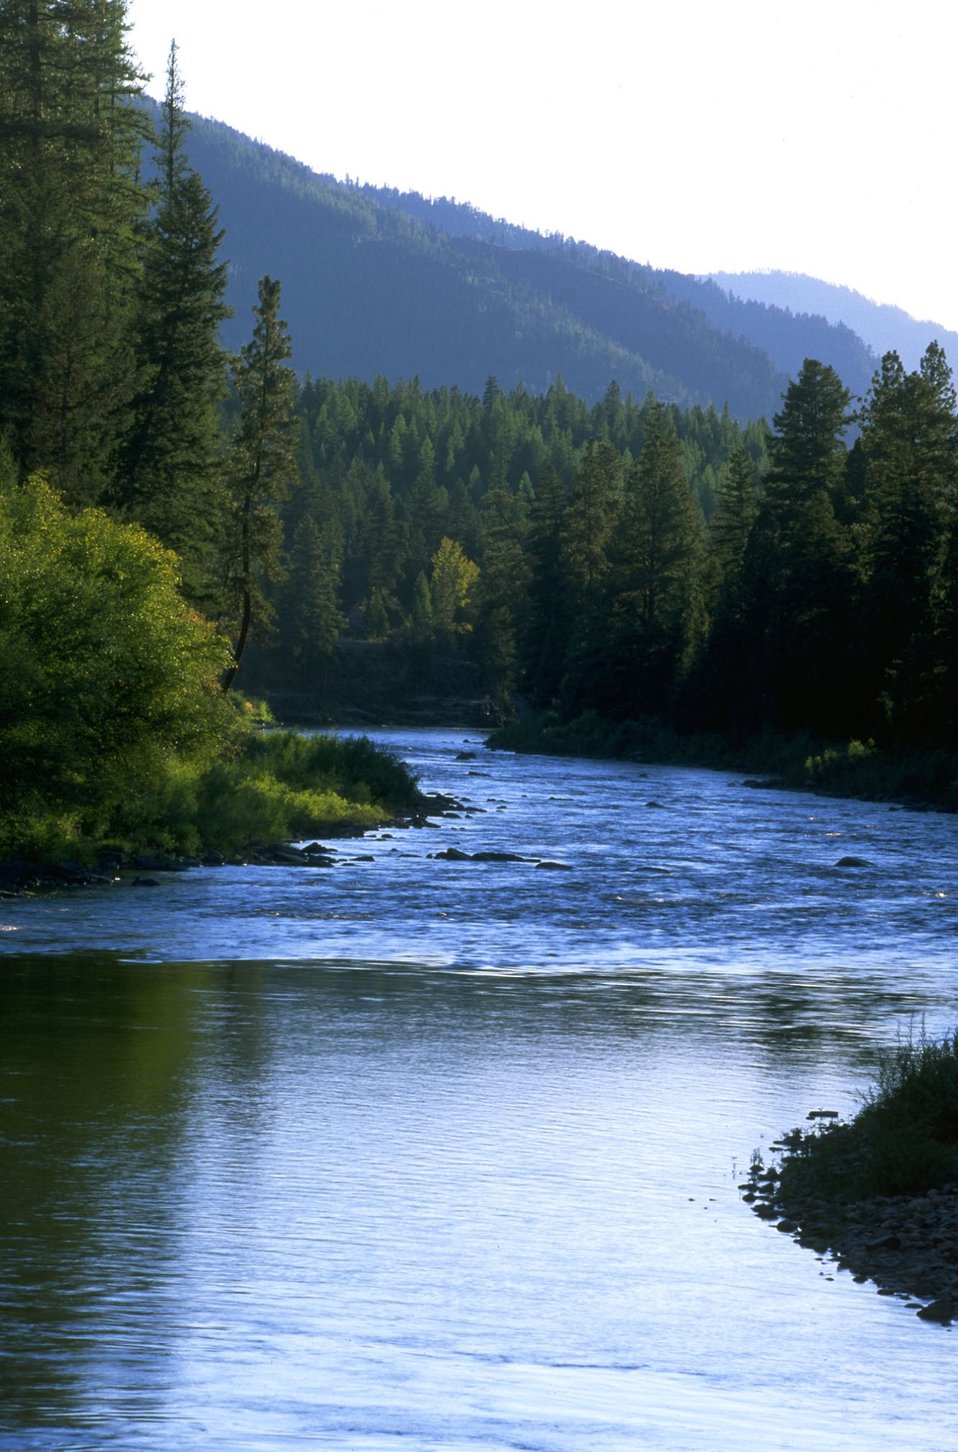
Early morning on the Blackfoot River VERTICAL